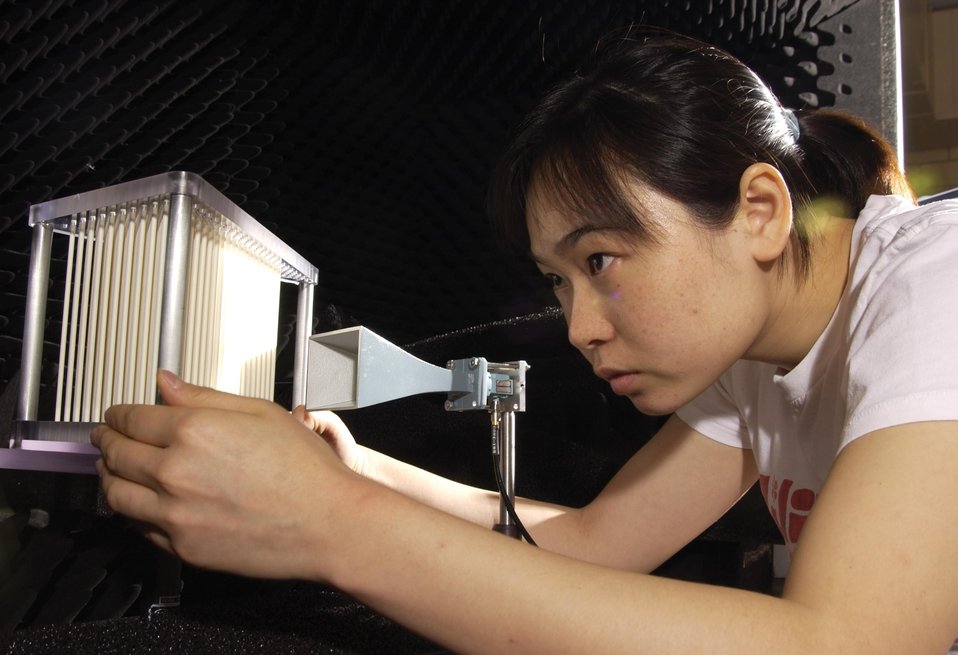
AMES LIBRARY GRADUATE ASSISTANT ADJUSTS A PHOTONIC CRYSTAL FOR ANGLE AND TRANSMISSION MEASUREMENTS.

PHOTONIC CRYSTALS WERE CONSTRUCTED BY AMES PHYSICISTS IN ORDER TO DEMONSTRATE NEGATIVE REFRACTION AND SUPERLENSING IN THE MICROWAVE REGION OF THE ELECTROMAGNETIC SPECTRUM. SCIENTISTS BELIEVE THAT EXPERIMENTS WITH THESE MATERIALS MAY LEAD TO THE DEVELOPMENT OF A TYPE OF FLAT SUPERLENS THAT OPERATES IN THE VISIBLE SPECTRUM, WHICH WOULD OFFER SUPERIOR RESOLUTION CAPTURING DETAIL MUCH SMALLER WHICH WOULD VASTLY IMPROVE IMAGING FOR BIOMEDICAL AND MATERIALS APPLICATIONS.